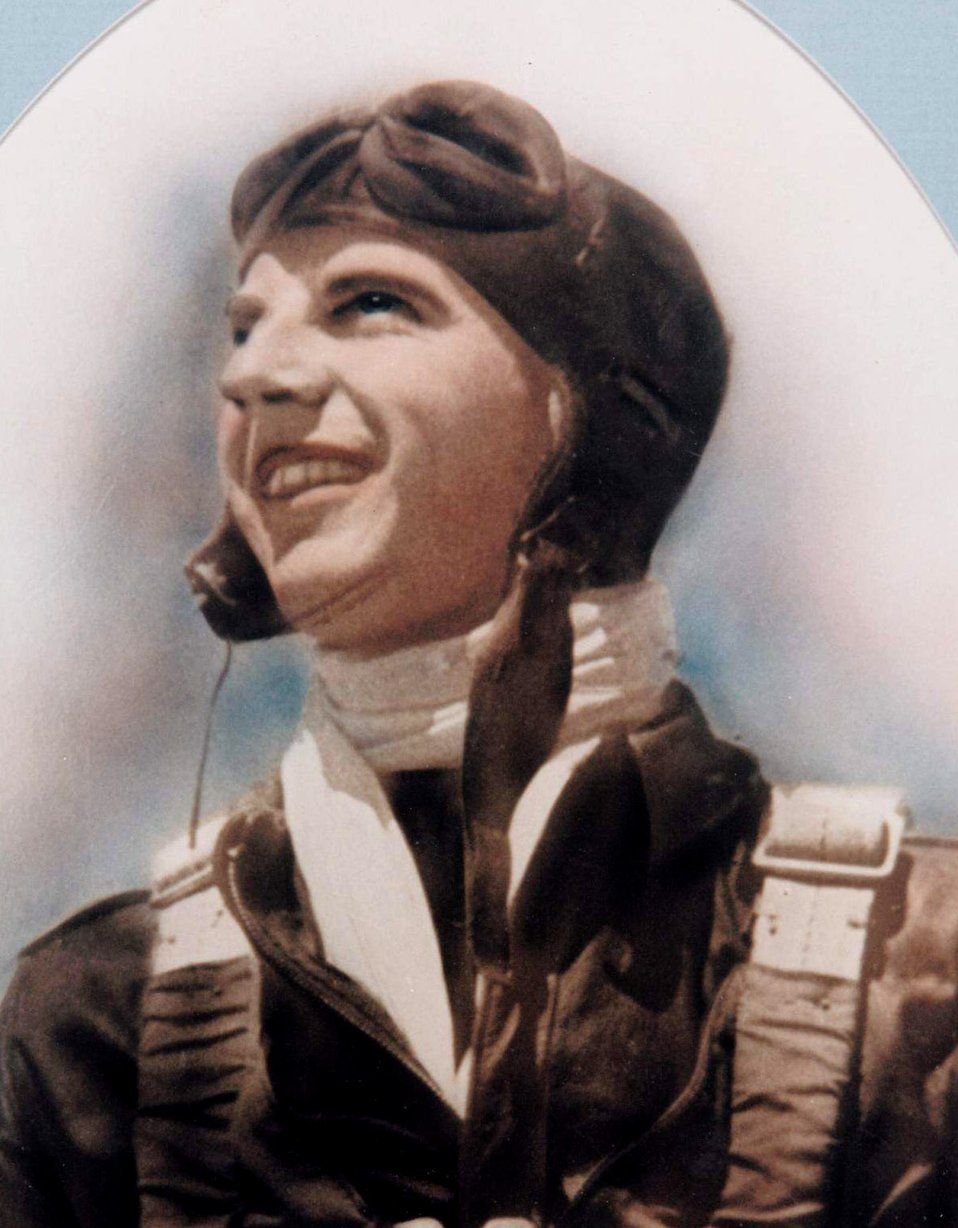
Lt. George A. Whiteman in a flight suit In 1940. This photo was presented to Whiteman Air Force Base, Mo., in 1955 when Sedalia Army Air Field was renamed in his honor. Lt. Whiteman, a native of Sedalia, Mo., was one of the first Airman killed during the attack on Pearl Harbor, Dec. 7, 1941.